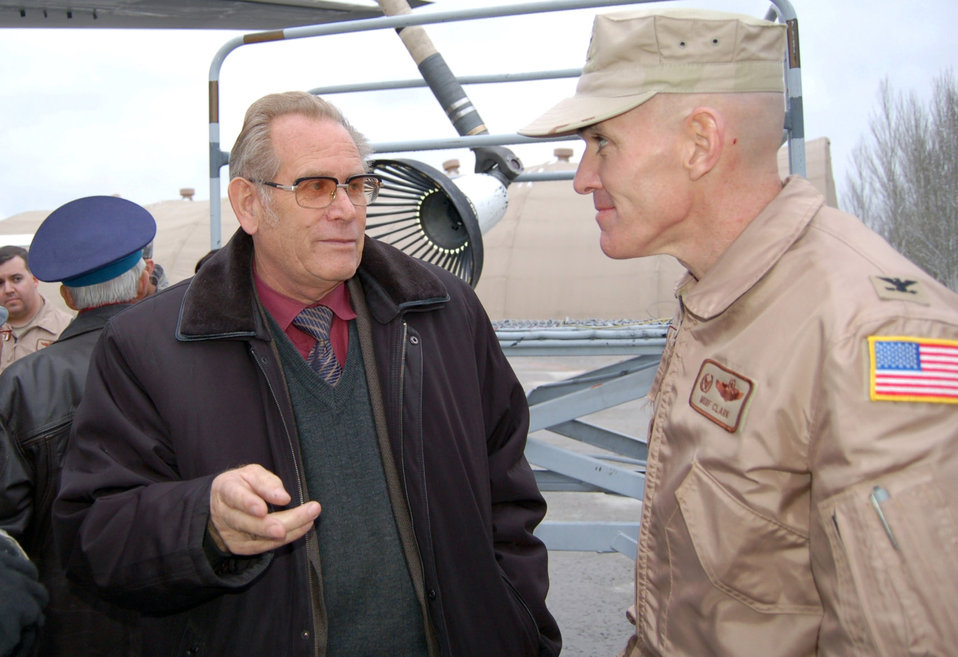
Kyrgyz war heroes, Manas Airmen enjoy Veterans Day

Retired Soviet air force Capt. Valeri Kolodyzahni talks to Col. Murray Clark about his ejection from a MiG-15 over Damascus, Syria, in 1962; an event which ended a dynamic military career that included meeting the first man in space, Yuri Gagarin, while at test pilot school. The base hosted the veterans for an appreciation day visit, which included a tour, dinner and the kickoff of a new program established to assist them with some of their living expenses. Colonel Clark is the 376th Expeditionary Operations Group commander.